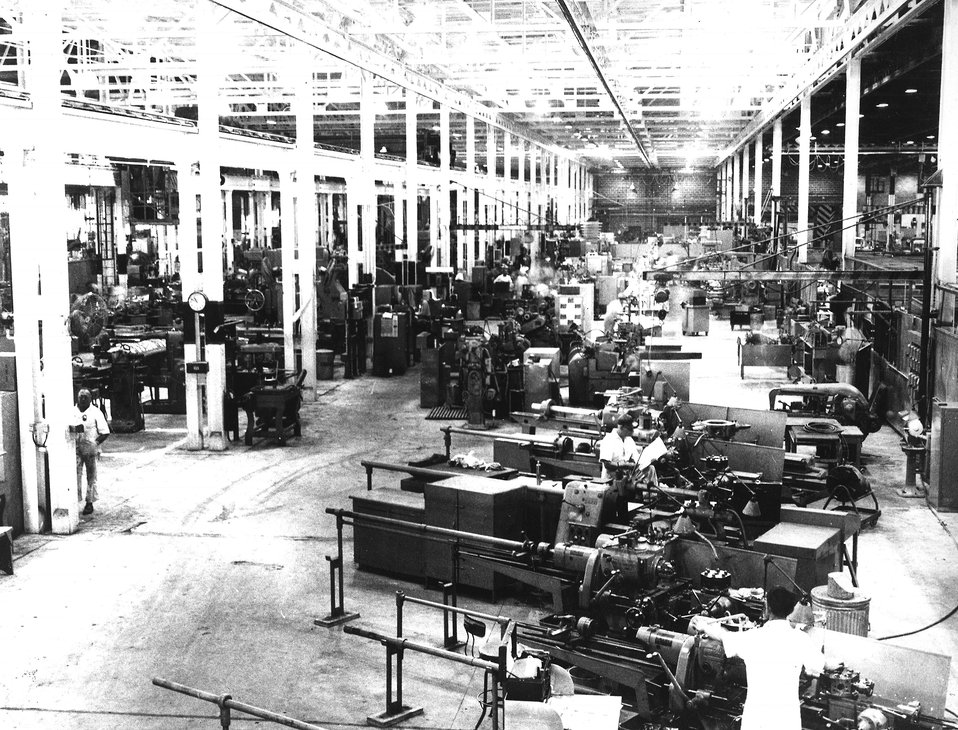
The ORGDP fabrication shops occupy over 300,000 square feet of floor space. c. 1965